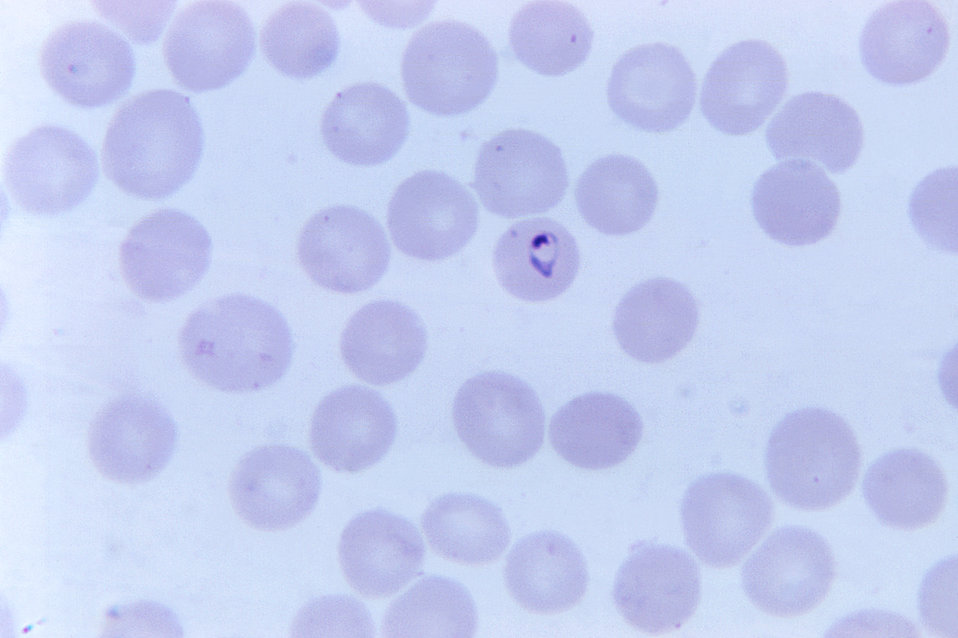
This thin film micrograph depicts a Plasmodium vivax ring with no Sch�'s dots, using Giemsa stain; Mag. 1125X.